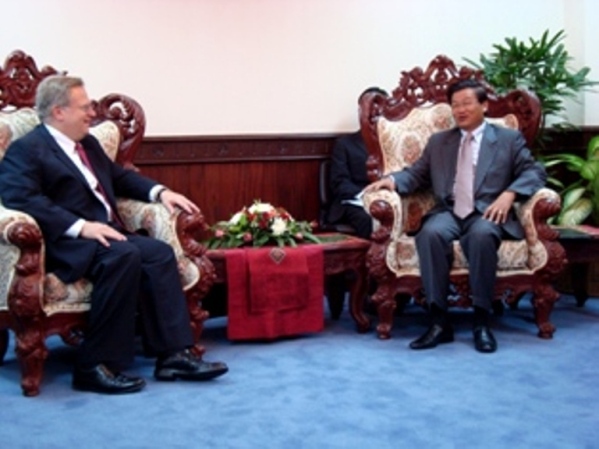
Assistant Secretary Schwartz Meets With Laotian Deputy Prime Minister/Foreign Minister Thongloun Sisoulith

U.S. Assistant Secretary of State for Population, Refugees and Migration Eric Schwartz meets with Deputy Prime Minister/Foreign Minister Thongloun Sisoulith at the Laos Ministry of Foreign Affairs to discuss Lao Hmong issues Laos in June 2010. Assistant Secretary for the Bureau of Population, Refugees, and Migration (PRM) Eric Schwartz visited Thailand and Laos in June to focus on the situation of Burmese ethnic minorities and Lao Hmong asylum seekers. Through PRM, the United States government provides financial assistance to the many organizations that are assisting these refugee populations in Thailand and Laos. Assistant Secretary Schwartz met with government officials and refugees themselves to see first-hand the challenges they face.